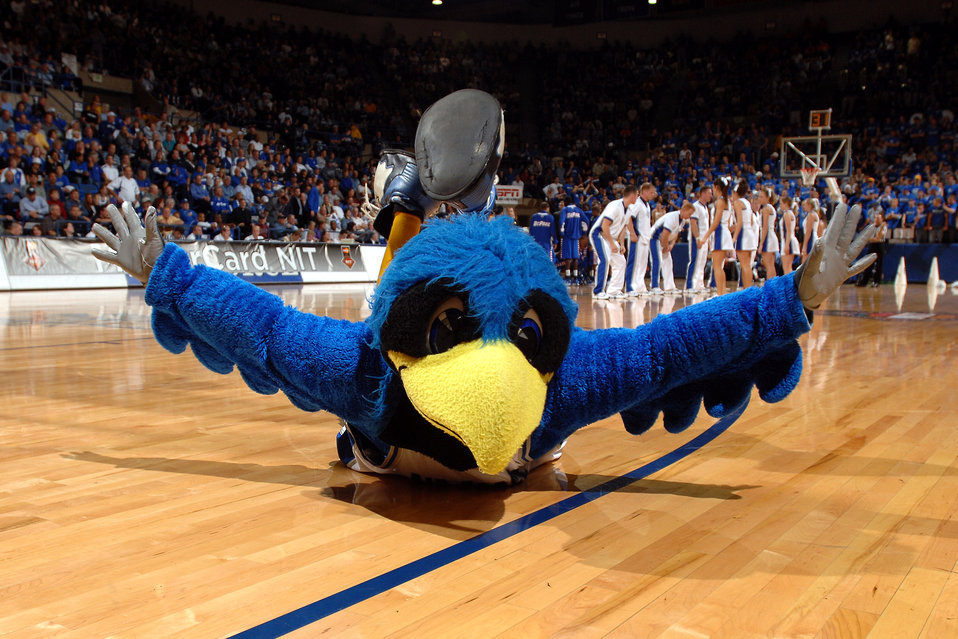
Falcons reach NIT final four in NYC

The Bird sticks a landing during a timeout at the Air Force/DePaul NIT quarterfinal game March 21 at Clune Arena. The Falcons edged the Blue Demons 52-51 for a berth in the NIT semifinals in New York City's Madison Square Garden March 27 against Clemson.